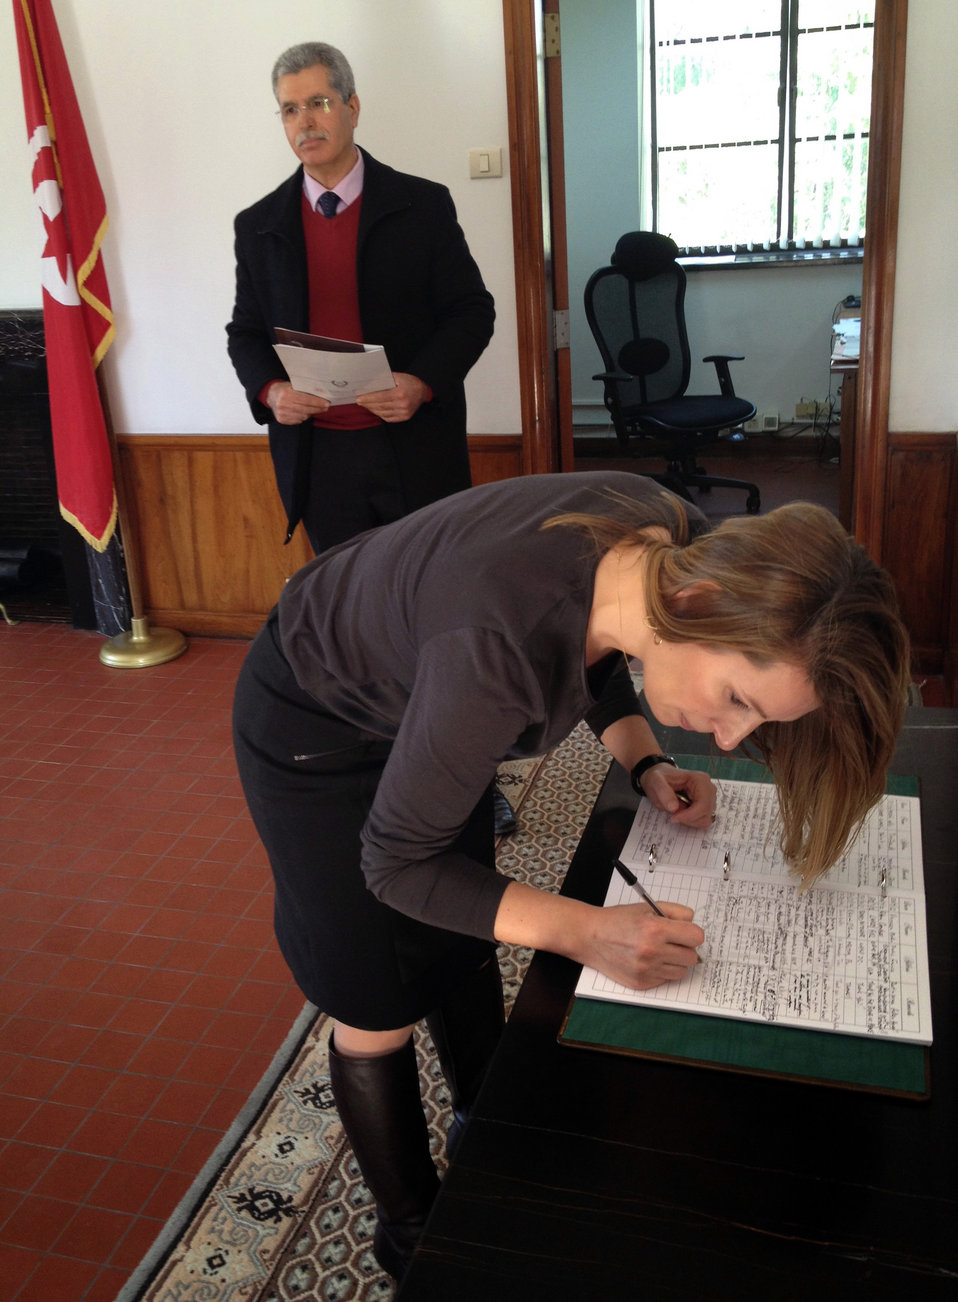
Deputy Secretary Higginbottom Signs the Guestbook at the North Africa American Cemetery in Tunis

Deputy Secretary of State for Management and Resources Heather Higginbottom signs the guestbook at the North Africa American Cemetery and Memorial in Tunis, Tunisia, on March 18, 2014.